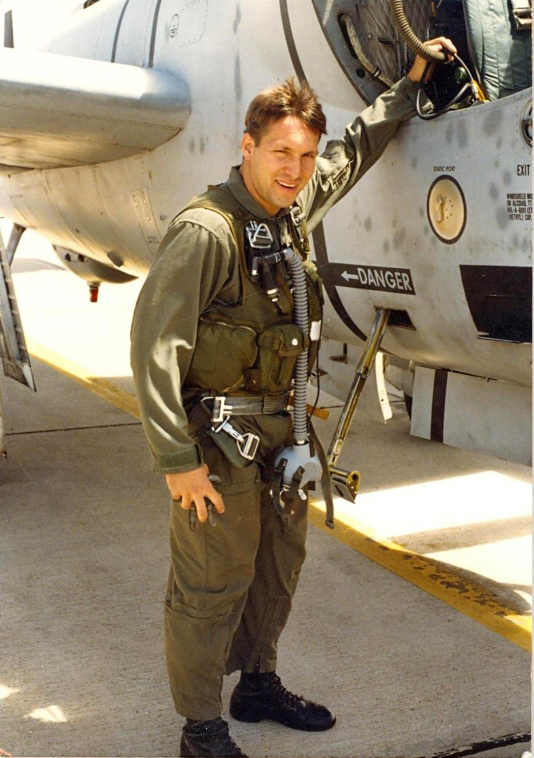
Matthias Laschet, a Biological Science Technician, Panama City Field Office joined the Fish and Wildlife service in 2009. His military training was utilized heavily during the Deep Water Horizon oil spill, both in interacting with other stakeholders and working in the field. He served in the U.S. Army for six years. During the Gulf War (1990-91), Matt served as a Fixed-wing aircraft mechanic, a Nuclear Biological and Chemical Non-Commissioned Officer (NBC NCO), and as public relations specialist for his unit.